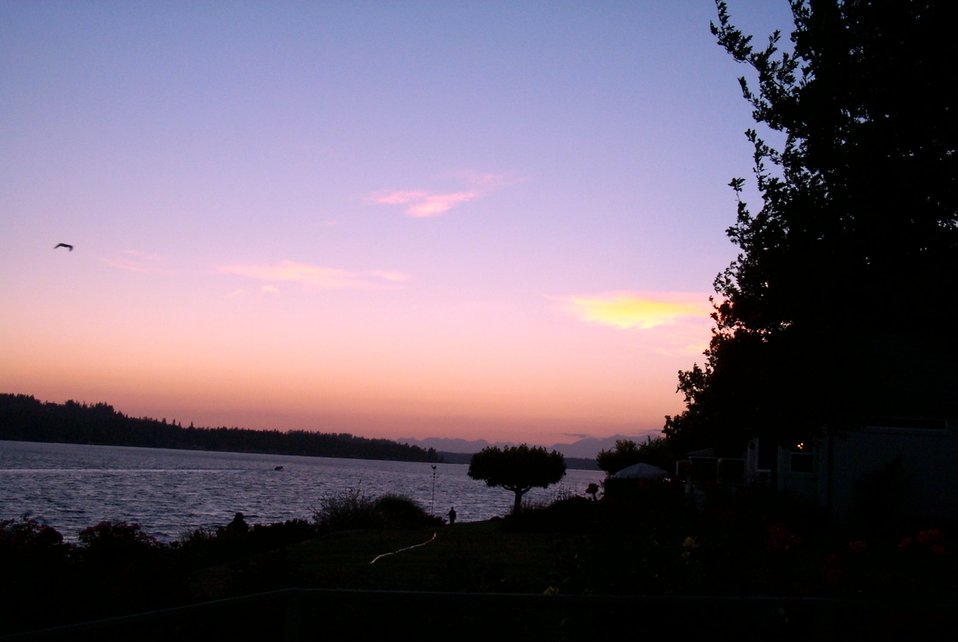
Fox Island and a silhouette of the Olympic Range as seen from Gig Harbor at sunset.